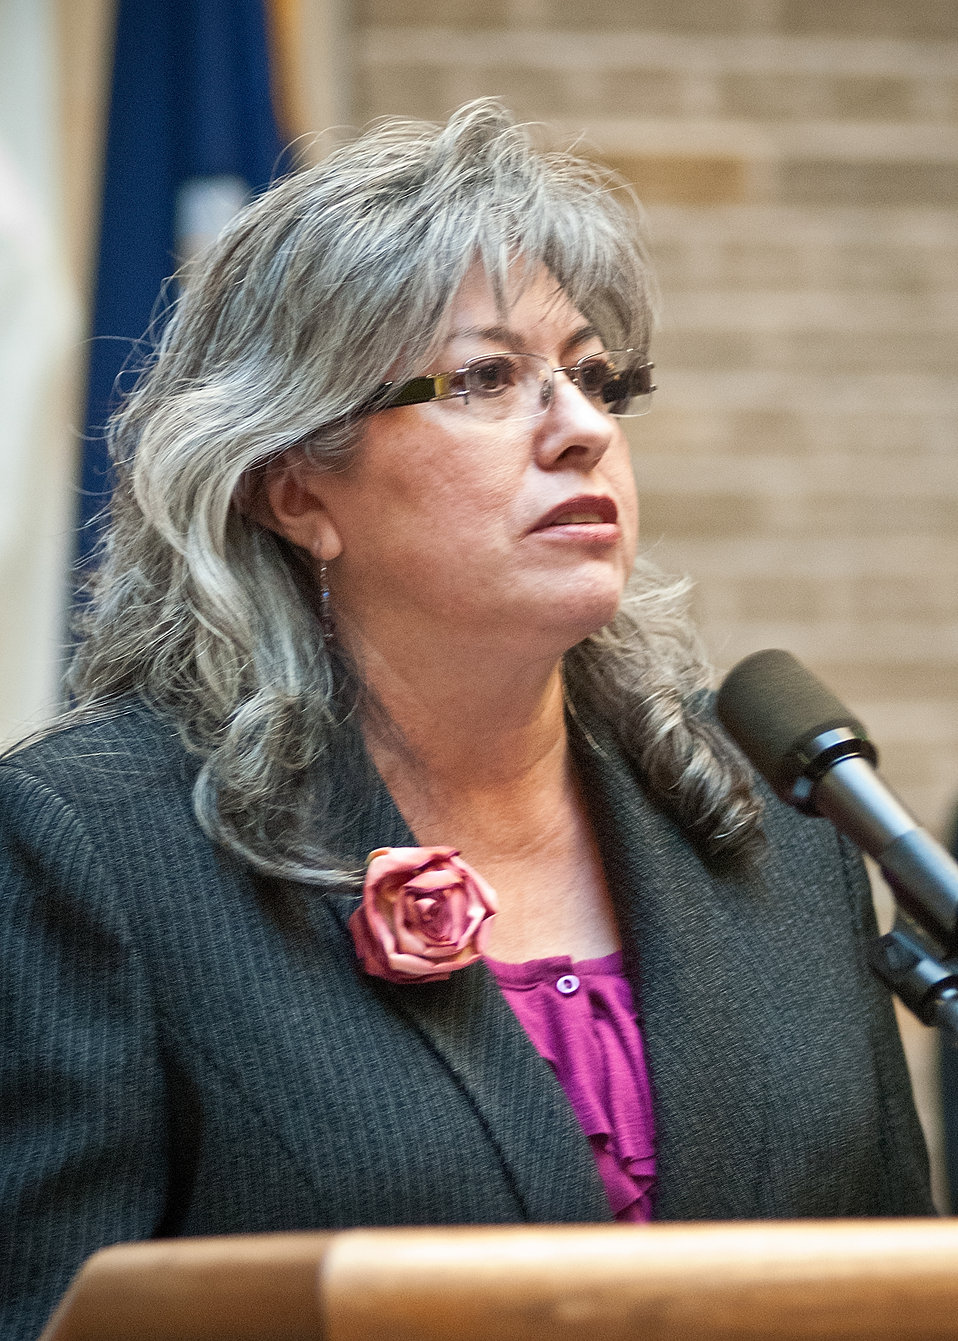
Febe Ortiz, Acting Departmental Hispanic Employment Program Manager welcomes U. S. Department of Agriculture employees to the Second Annual Chili Challenge Contest to celebrate Hispanic Heritage Month at USDA in Washington, DC, on Thursday, October 6, 2011. Celebrity chefs and USDA employee chef volunteers used chili’s in delicious recipes to celebrate Hispanic cuisine. USDA’s traditional Chili Challenge trophy will be awarded to this year’s best-tasting chili. The judges for the challenge will be Chefs Toni Tipton-Martin, Chef Pedro Matamoros from 8407 Kitchen Bar, Corporate Executive Chef Lance Lemin, Ed Avalos, Undersecretary, Marketing and Regulatory Programs and Krista Hardin, Chief of Staff.